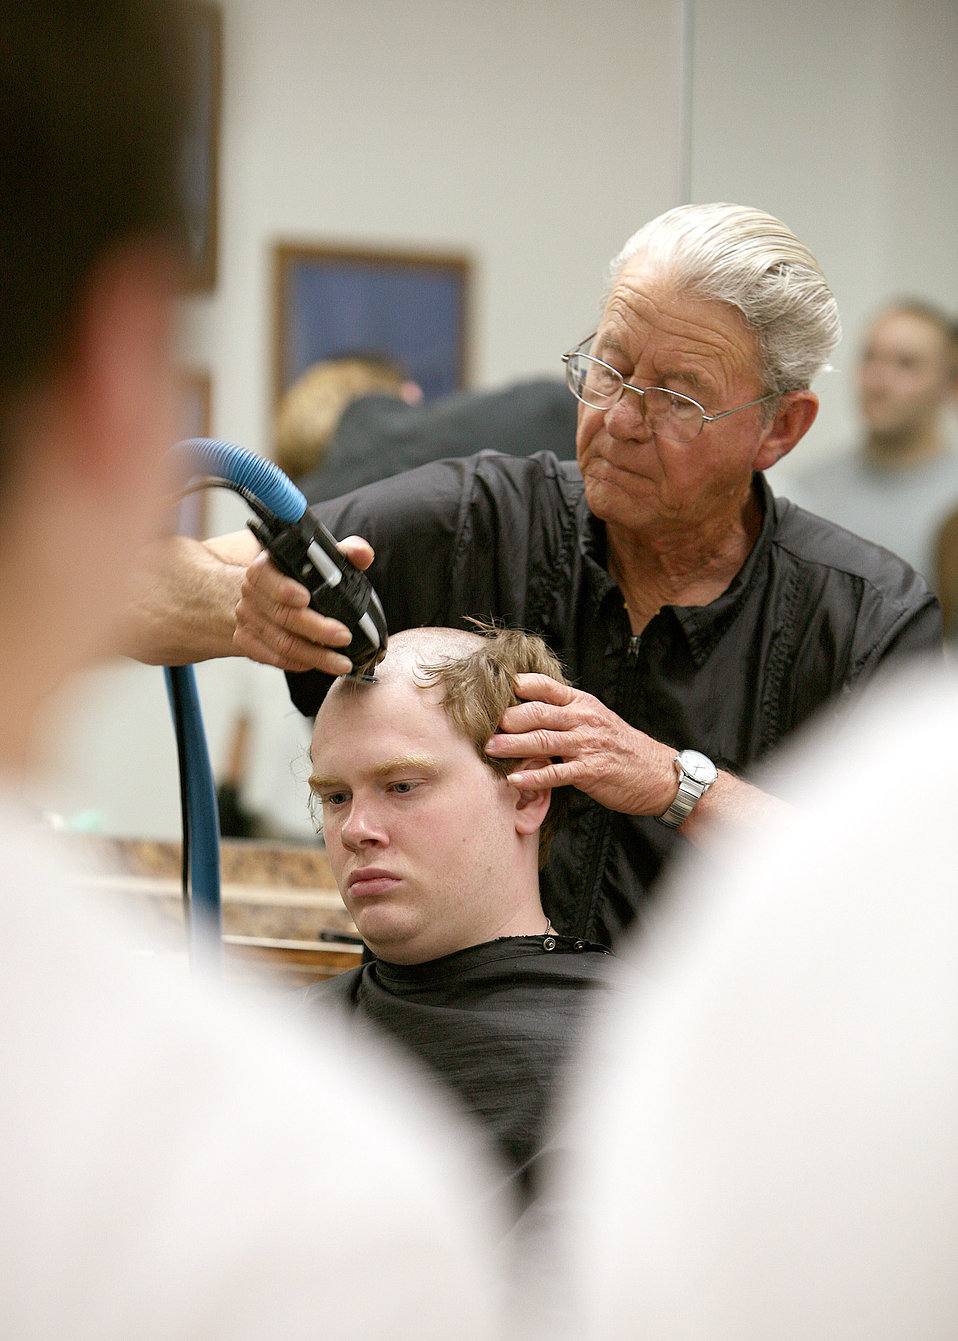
First steps of future Airmen

Doc Grimes gives Air Force basic trainee Robert Kraft his first military hair cut May 2 at Lackland Air Force Base, Texas. Trainee Kraft is assigned to the 323rd Training Squadron Flight 393. The flight is scheduled to graduate Air Force Basic Military Training on June 15.